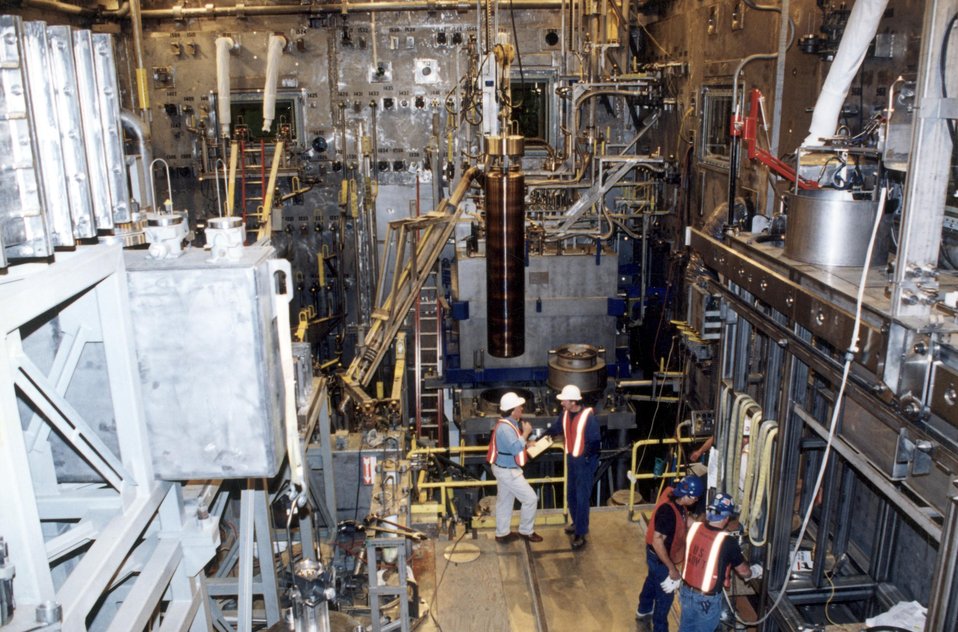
WORKERS IN THE VITRIFICATION FACILITY AT THE WEST VALLEY DEMONSTRATION PROJECT.

IN THE BACKGROUND, A 2-TON CANISTER OF TEST GLASS IS BEING LIFTED OUT OF THE MELTER TURNTABLE. THE WEST VALLEY DEMONSTRATION PROJECT, NEW YORK AND THE DEFENSE WASTE PROCESSING FACILITY AT THE SAVANNAH RIVER SITE ARE THE NATION'S HIGH-LEVEL NUCLEAR WASTE VITRIFICATION PLANTS.